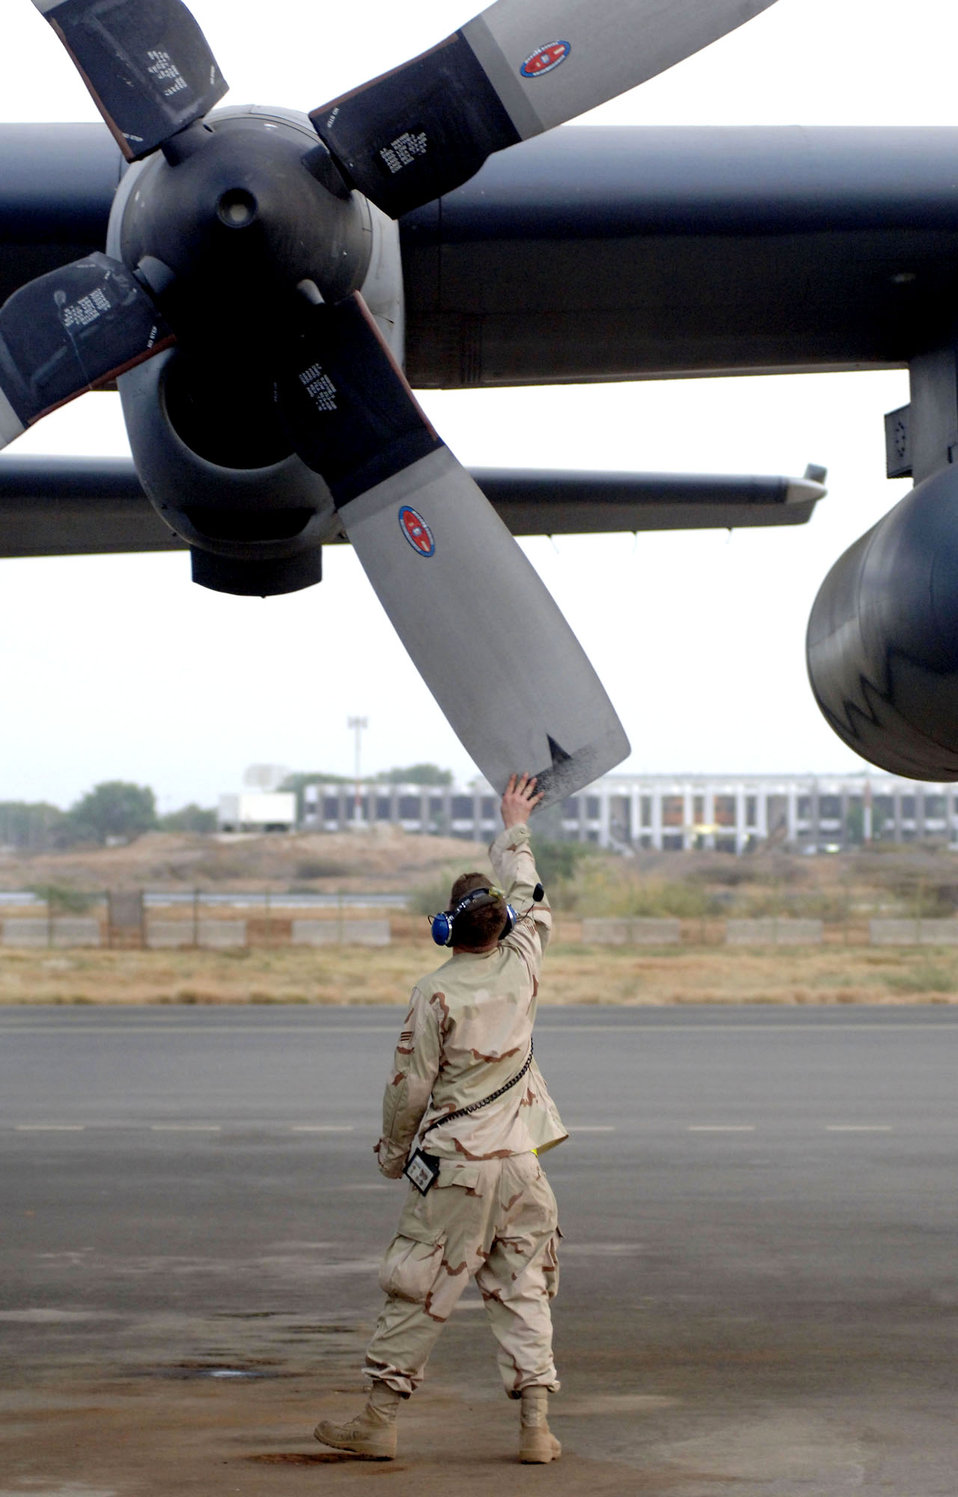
Djibouti air ops

Senior Airman Dwight Madero checks the propellers on an HC-130P prior to take off from Camp Lemonier air field in Djibouti, Africa. The Air Force contingency at Camp Lemonier has almost 200 Airmen who support the Combined Joint Task Force-Horn of Africa mission. Airman Madero is assigned to the 71st Expeditionary Rescue Squadron.